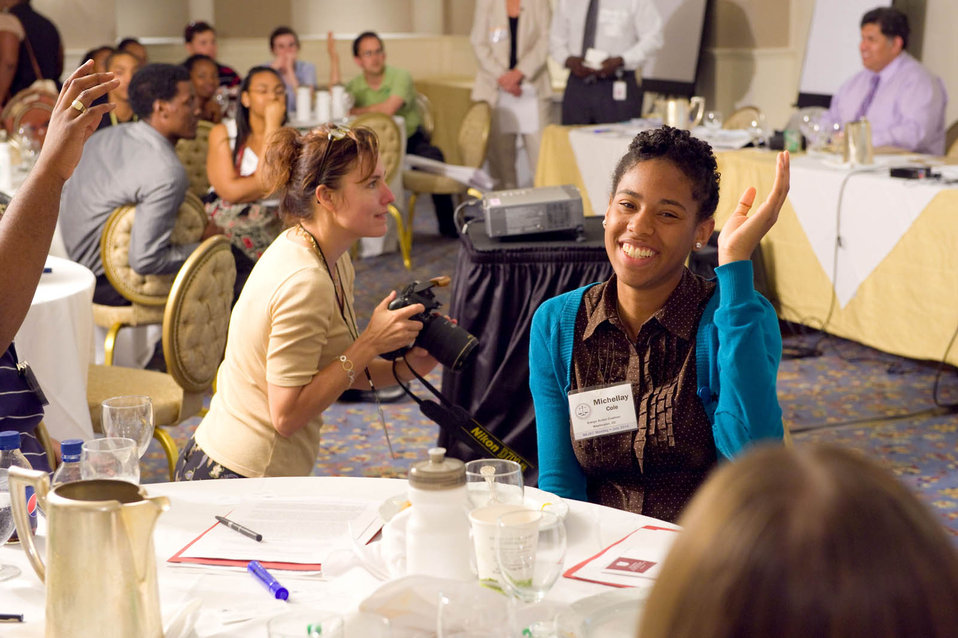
July 27, 2010 Environmental justice workshop for students in DC